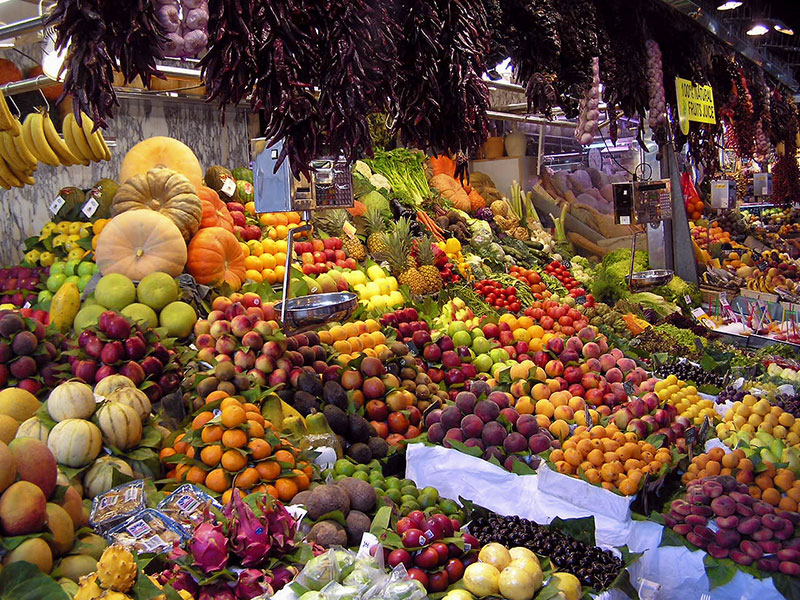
I modified the general contrast, gradation and colors of the original in Adobe Photoshop